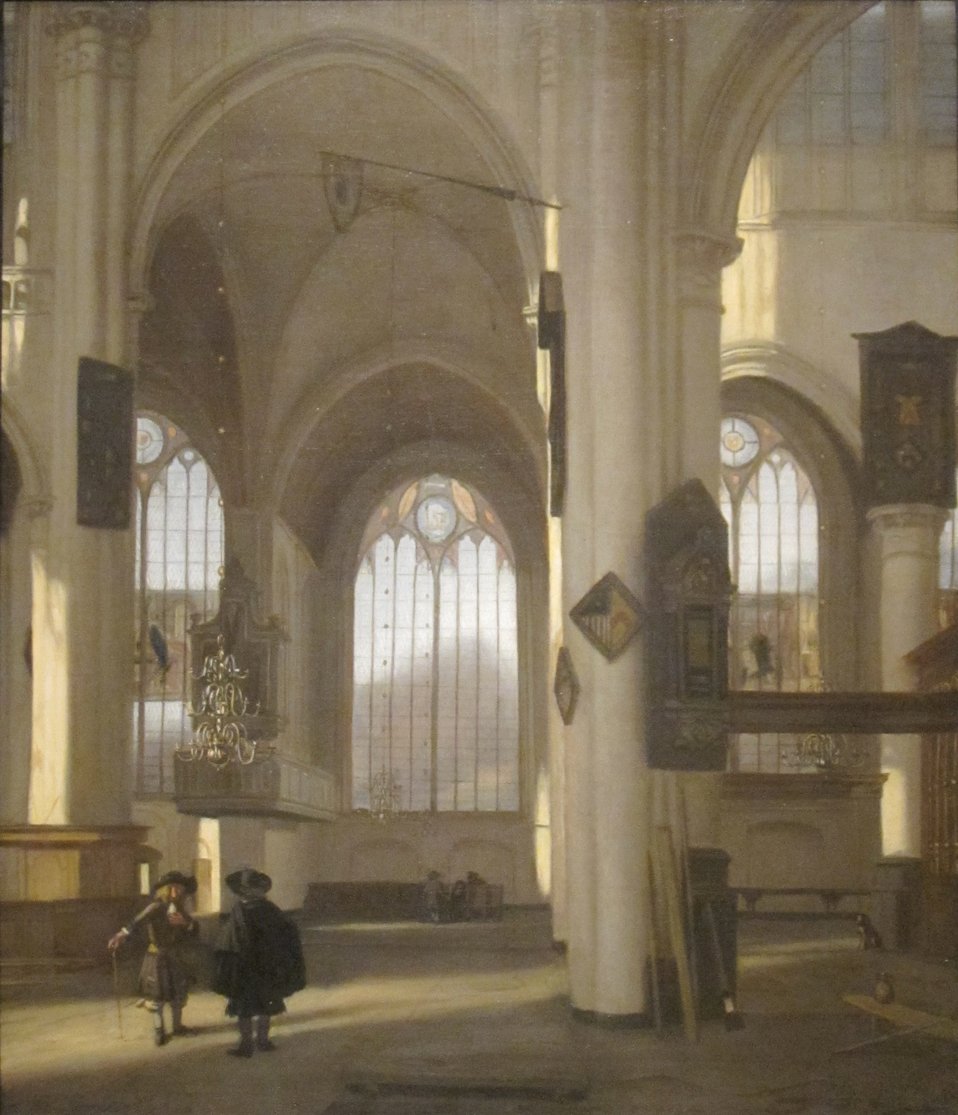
'Interior of a Church', oil on canvas painting by Emanuel de Witte, c. 1680, Cleveland Museum of Art